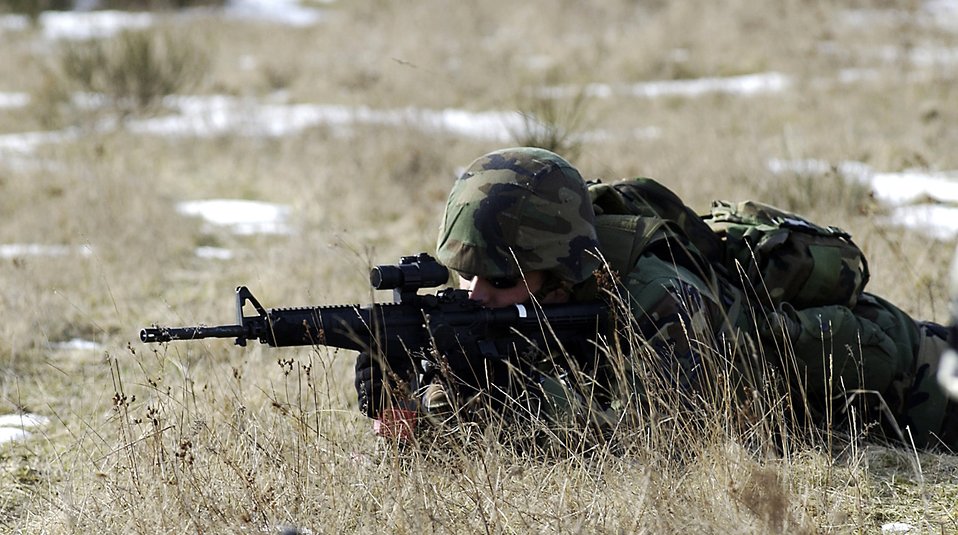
In the weeds

BAUMHOLDER, Germany -- Staff Sgt. James Howard fires at range targets during a simulated frontal ambush during live-fire training at a training range here March 14. All deployable U.S. Air Forces in Europe security forces Airmen receive this training as part of their air and space expeditionary force certification. The course prepares the Airmen to perform defensive operations. Sergeant Howard is assigned to the 786th Security Forces Squadron at nearby Ramstein Air Base.